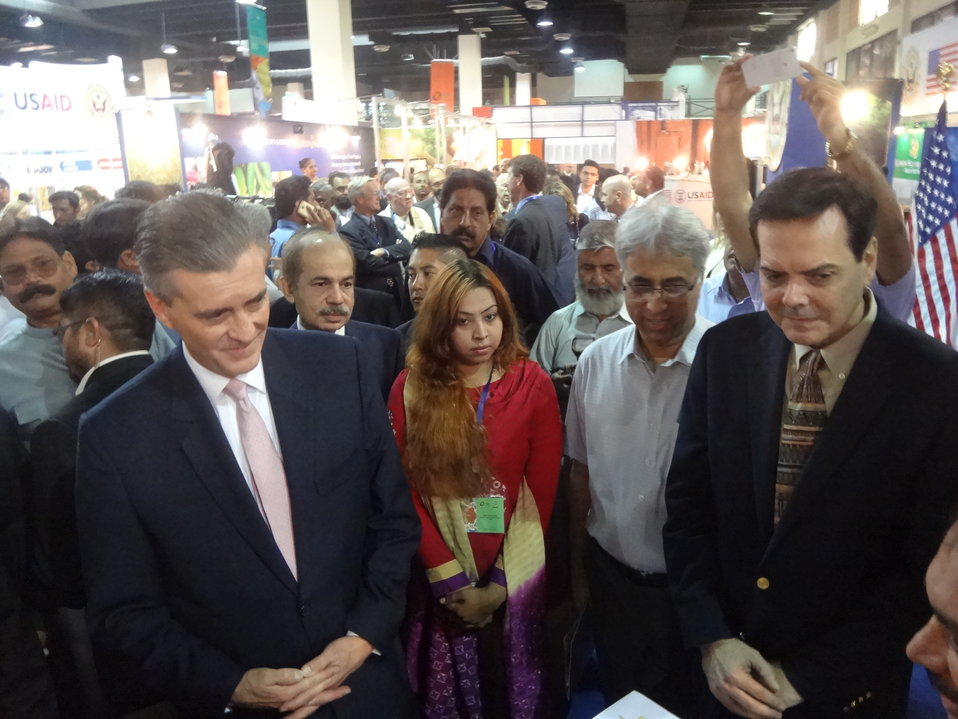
US Ambassador's visit to The Agribusiness Project at TDAP Expo, Karachi, September 27, 2013 (2)